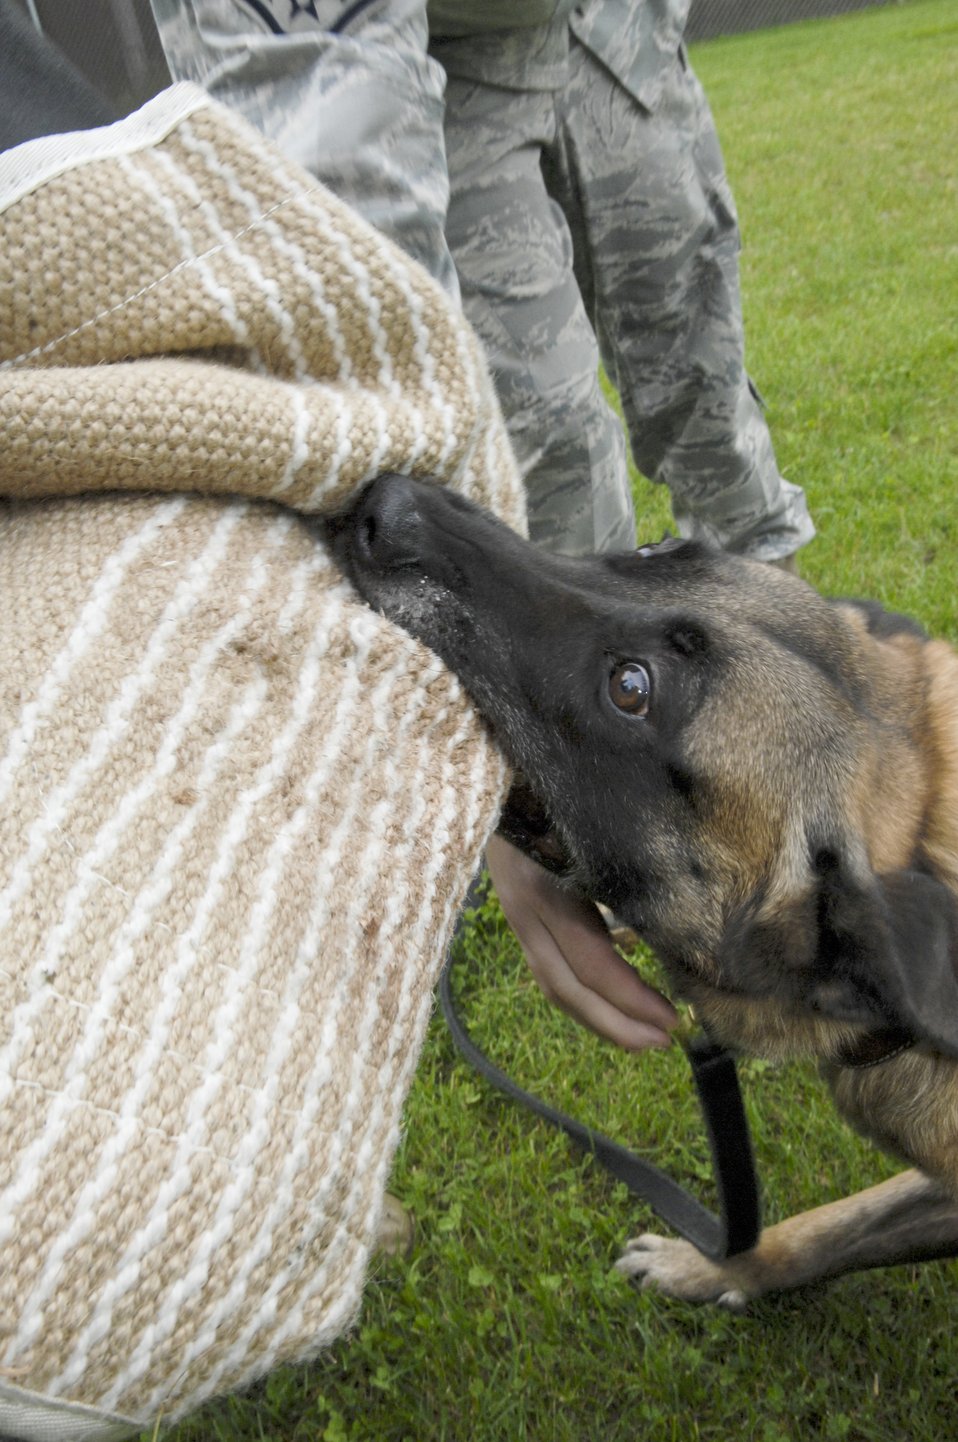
Working dogs at Elmendorf

Military working dog Dusty holds a